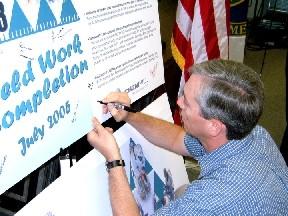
Hanford site visit

In July 2006, Deputy Secretary of Energy Clay Sell joined tank-farm workers at the Hanford Site in Richland, WA as they expressed their sense of pride in completing the 11-year project to complete fieldwork for the Tank Farm upgrades.